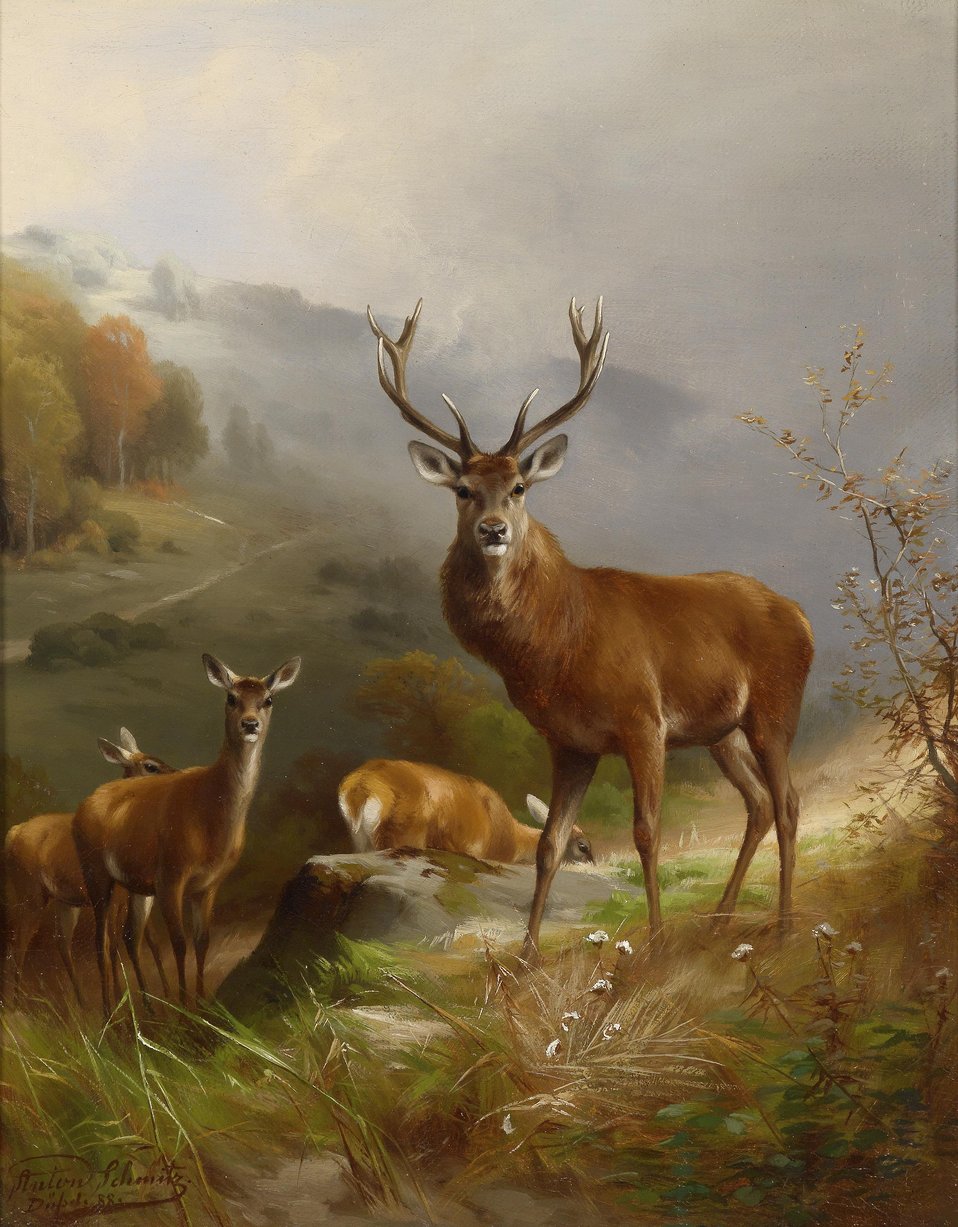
Rotwild, signiert, bezeichnet und datiert Anton Schmitz Düssd. (18)88, Öl auf Leinwand, 39 x 31,5 cm